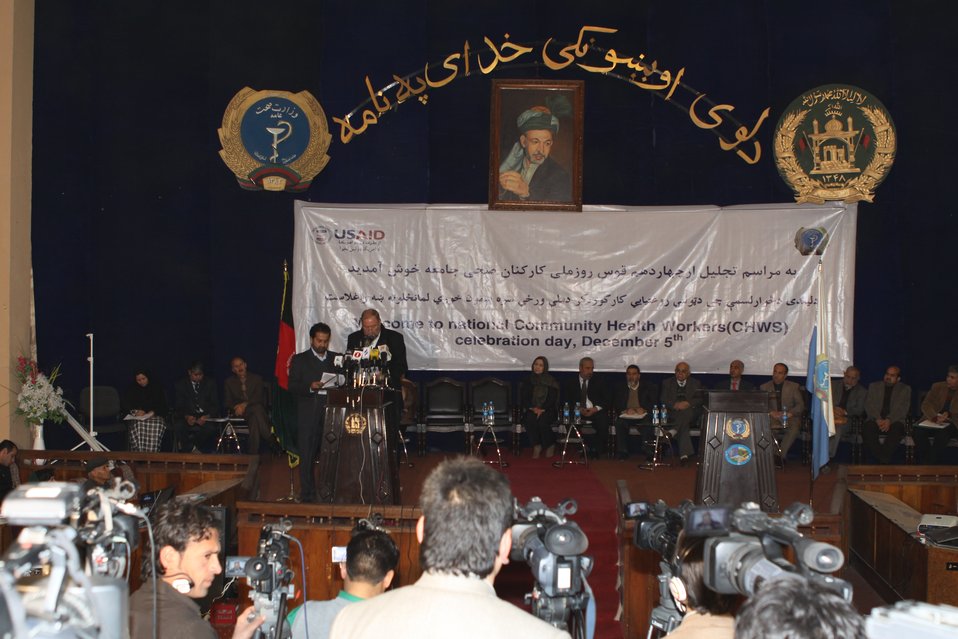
Community Health Workers Celebrated

Kabul, Afghanistan | December 5, 2010 — In support of the United Nations designated International Volunteer Day for Economic and Social Development, Afghanistan’s Ministry of Public Health celebrated its annual Community Health Worker Day today. Acting Minister of Public Health Dr. Suraya Dalil, USAID Senior Deputy Mission Director Robert Hellyer, other government officials, and international donors joined in recognizing the critical contribution of community health workers in Afghanistan and encouraging them to continue their voluntary support to their communities.
The event praised the contributions of the more than 22,000 volunteers throughout the country who deliver community level health-education, counseling, and services out of village health posts located in private homes. The Ministry of Public Health envisioned that community-based healthcare programs will actively encourage communities and families to adopt healthy lifestyles and behaviors, and provide families access to high quality and socially acceptable preventative medicine and life-saving services.
“We have 22,000 community health workers in Afghanistan that are able to implement the basic and standard medicines. They all have been trained through a job description,” said Minister Dalil. Addressing the health workers, she added, “I am proud and feel powerful that I have people like you.”
USAID-funded health projects collaborate closely with the Ministry of Public Health to improve the health and nutritional status of Afghans, provide quality primary healthcare, and promote healthy behaviors at the community and household-levels. USAID supported the training of more than 9,000 of the volunteer community health workers currently working in Afghanistan.
“On behalf of the American people, I congratulate the Community Health Workers for their diligence to gain the skills and knowledge necessary to serve their communities in this important role,” said USAID Senior Deputy Mission Director Hellyer. “USAID strongly supports community based health care and believes that quality community-based health services are essential to reaching Afghanistan’s Millennium Development Goals.”
To support the Basic Package of Health Services, USAID assisted in developing the community health worker training manual, helped train community health worker supervisors and master-trainers, facilitated in-service training, and produced and developed reporting tools, job aids, and education materials.